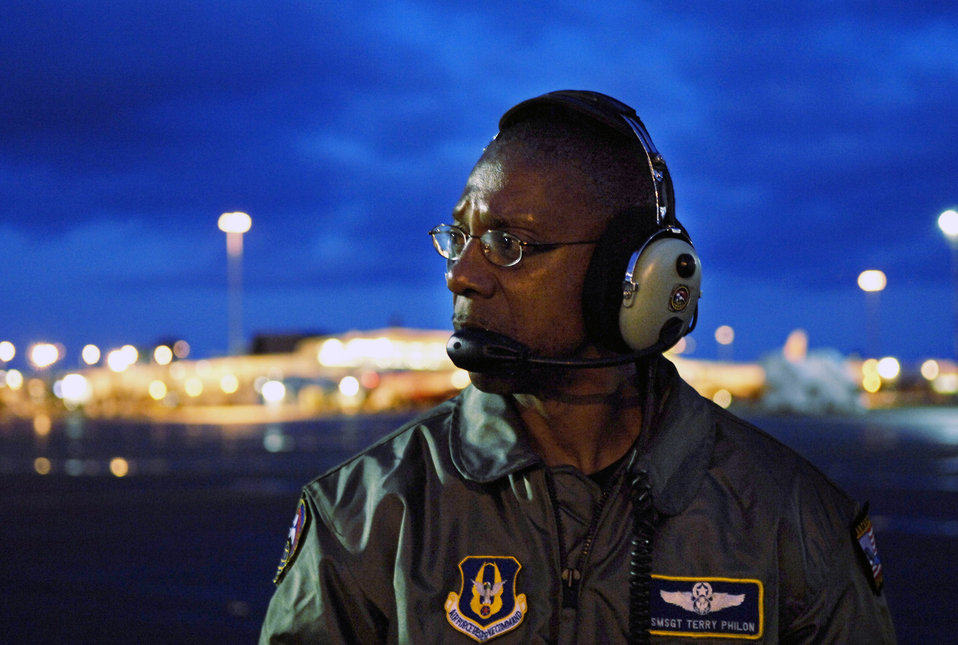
Operation Deep Freeze 2007-08 begins

Senior Master Sgt. Terry Philon conducts pre-flight checks on his C-17 Globemaster III for a winter fly-in mission during Operation Deep Freeze Aug. 20 at Christchurch, New Zealand. A C-17 and 31 Airmen from McChord Air Force Base, Wash., began the annual winter fly-in augmentation of scientists, support personnel, food and equipment for the U.S. Antarctic Program at McMurdo Station. WinFly is the opening of the first flights to McMurdo Station, which closed for the austral winter in February.